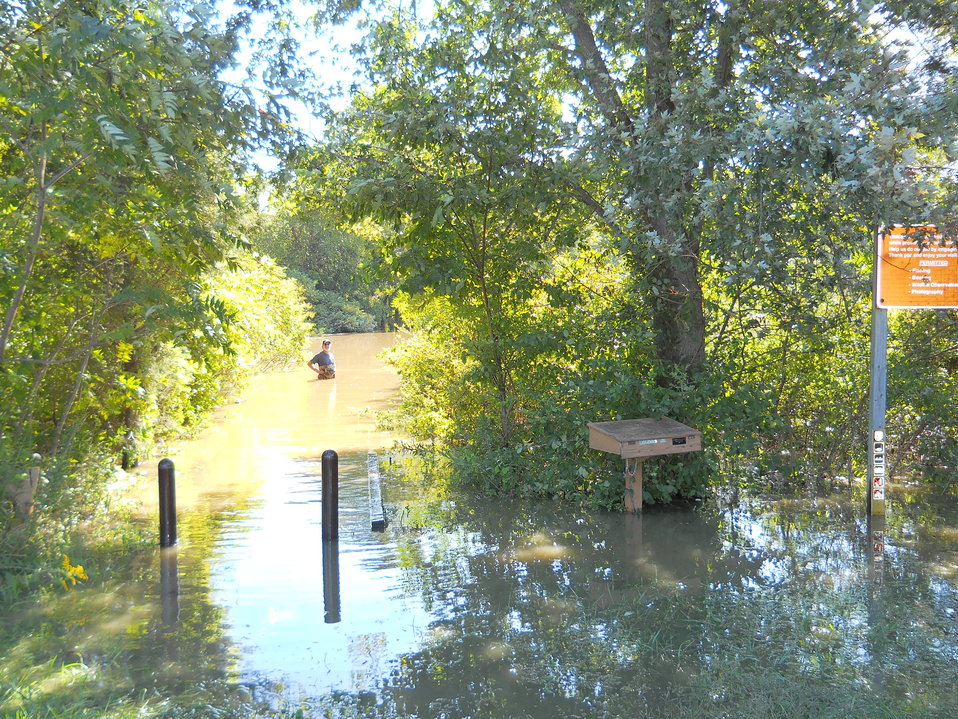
Hurricane Damage at Wallkill River National Wildlife Refuge August 30, 2011

Flooding at Bassett's Bridge Canoe Launch and fishing access area, Sussex, NJ.